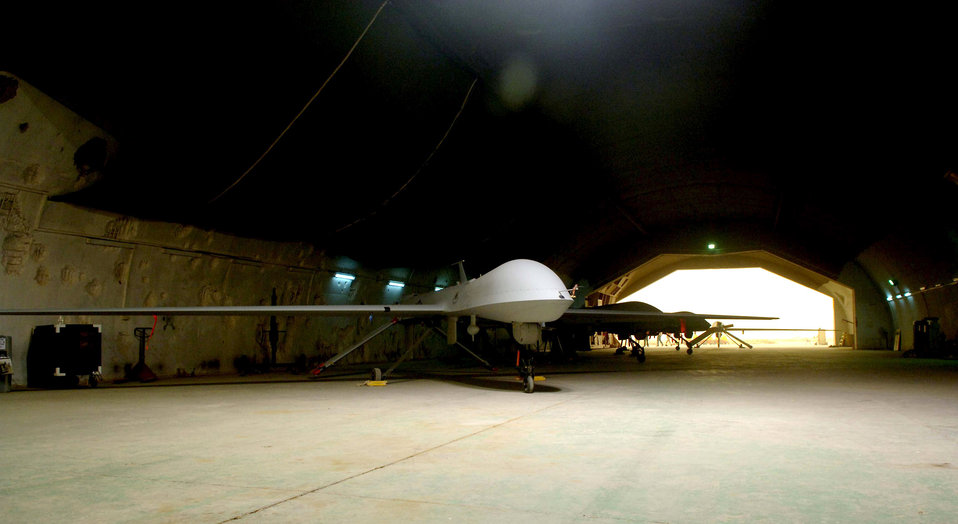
Predator crashes in Afghanistan

An MQ-1 Predator unmanned aerial vehicle, like this one sitting in a hangar at Balad Air Base, Iraq, crashed shortly after takeoff June 12 from Bagram Air Base, Afghanistan.